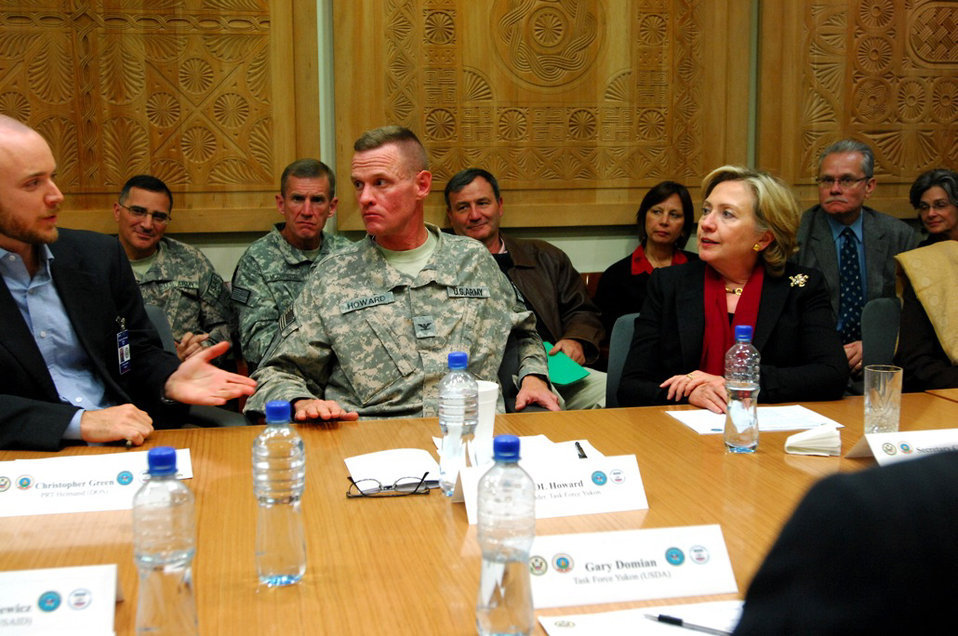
Secretary Clinton Travels to Afghanistan

U.S. Secretary of State Hillary Rodham Clinton during a meeting at the U.S. Embassy in Kabul, Afghanistan November 19, 2009. Secretary Clinton traveled to Afghanistan to attend President Hamid Karzai's November 19, 2009 inauguration ceremony, meet with Afghanistan's leadership, international partners and allies, U.S. troops, staff in Provincial Reconstruction Teams, and Embassy staff.